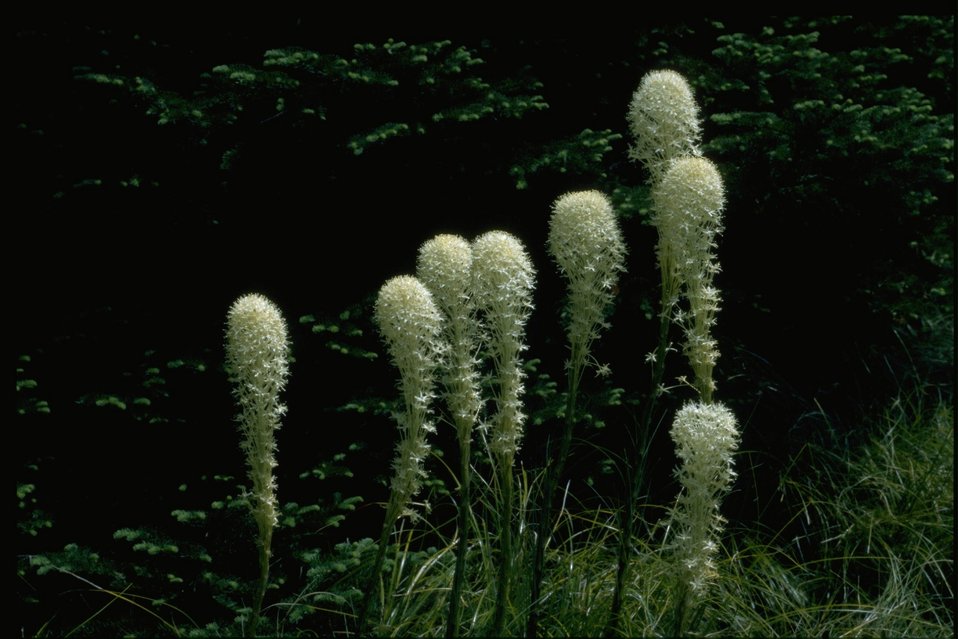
Medium shot of Xenophyllum tenax.